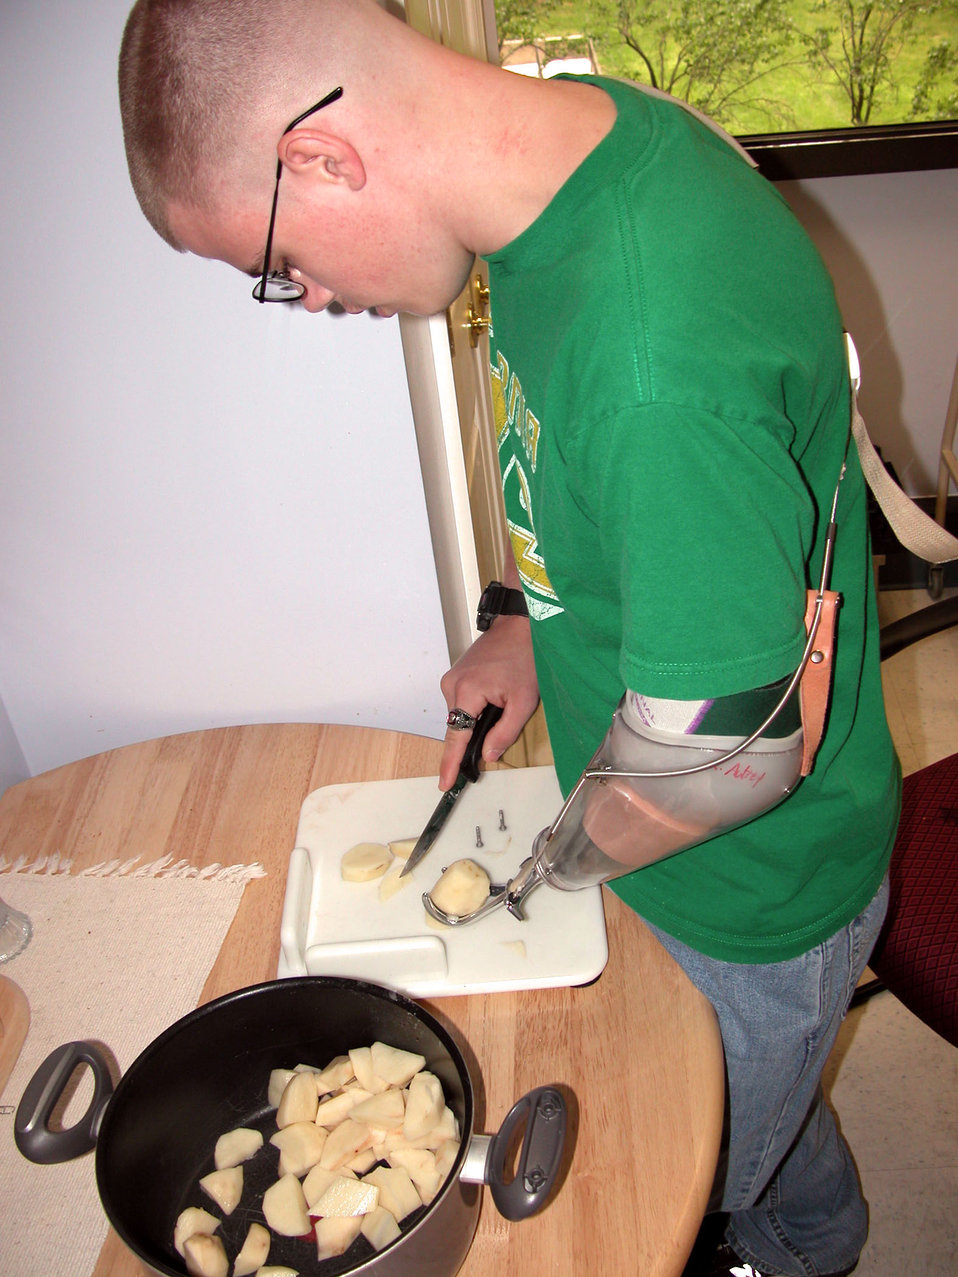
Severely injured troops relearn living skills

WASHINGTON -- Marine Lance Cpl. Ryan Autery, 20, uses his prosthetic left hand to hold a potato while cutting it with his right hand during cooking classes for troops with disabilities at Walter Reed Army Medical Center.